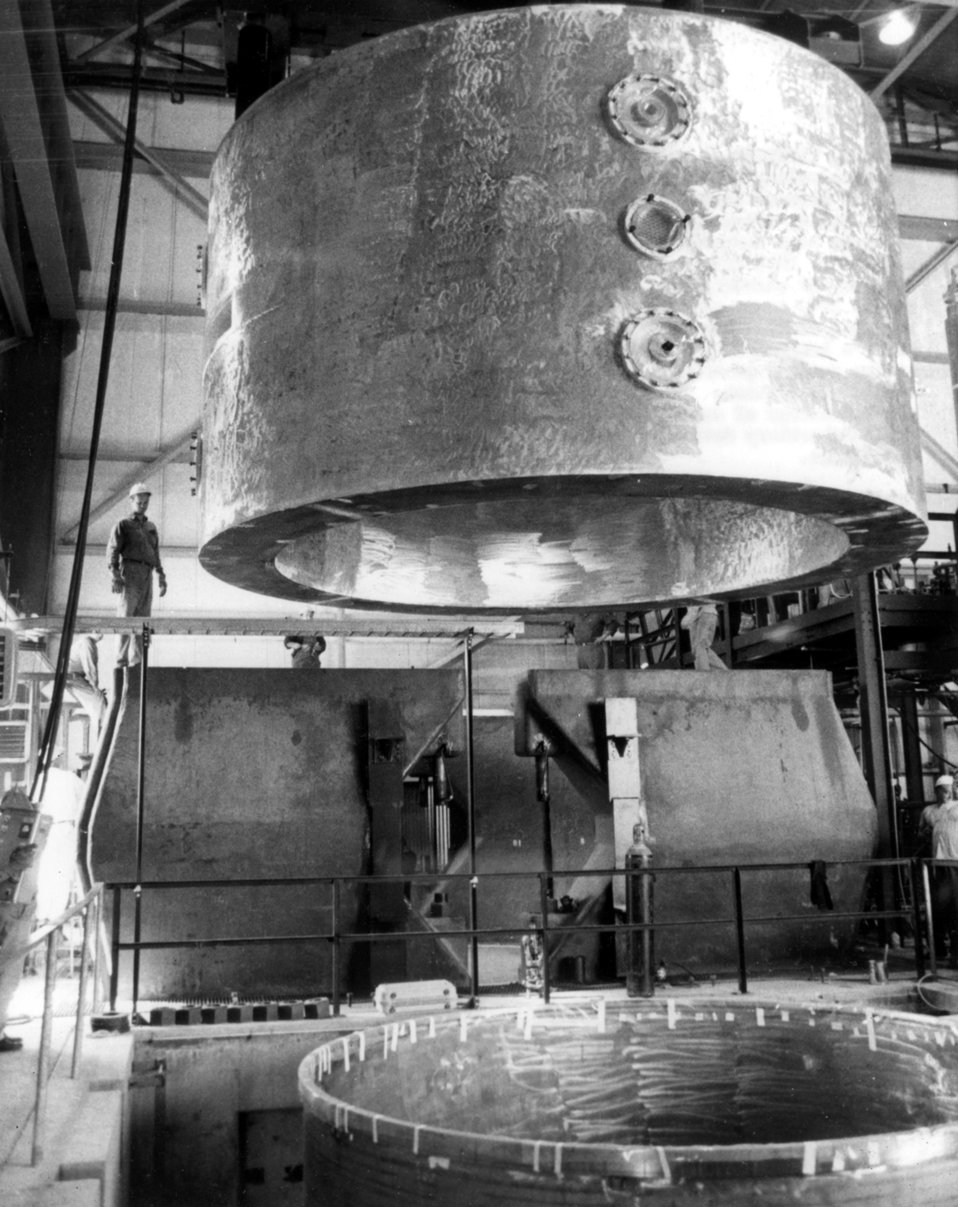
Coils of the world's largest superconducting magnet are lowered into their steel yoke at Argonne.
c.1969